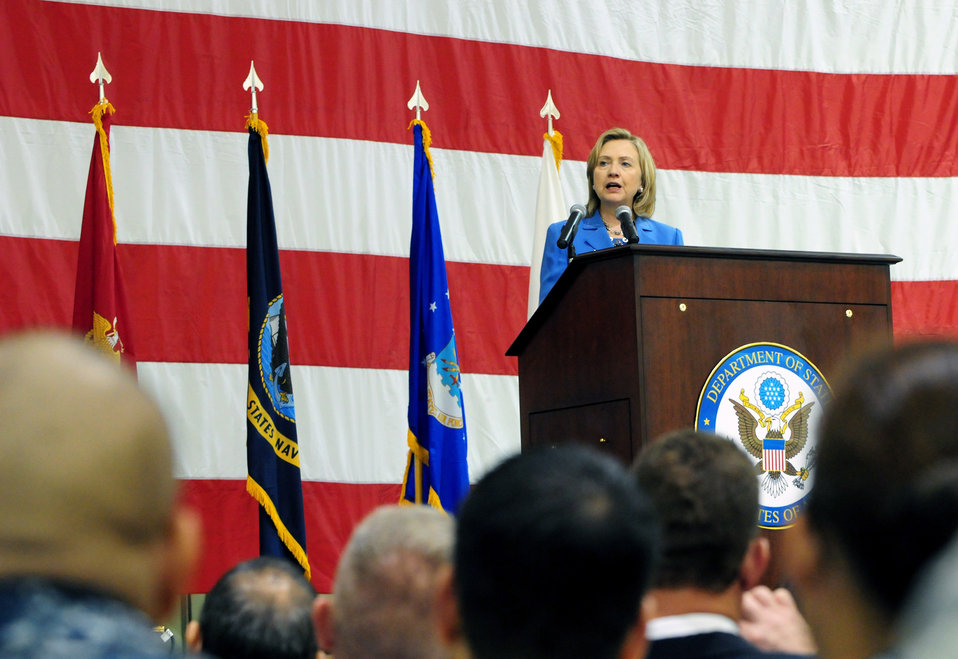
Secretary of State delivers message of praise to Andersen servicemembers

Secretary of State Hillary Clinton speaks to more than 1,000 servicemembers Oct. 29, 2010, at Andersen Air Force Base, Guam. Secretary Clinton visited the base as part of her trip to the Asia-Pacific region.